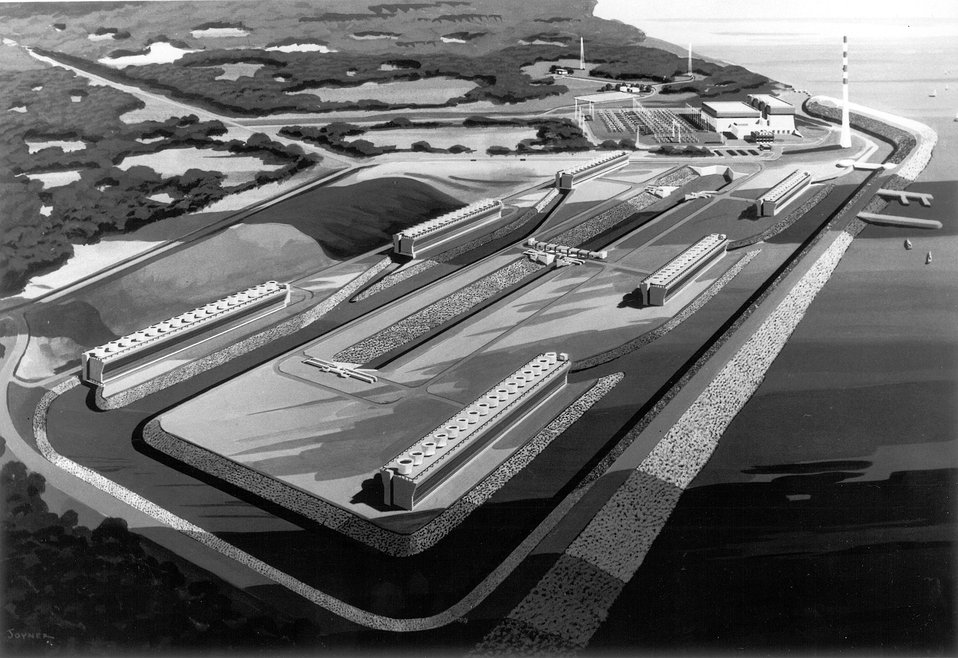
The $43 million cooling tower system shown in this rendering is under construction at the Tennessee Valley Authority's Browns Ferry Nuclear Power Plant to enable the plant to meet revised Alabama water temperature limits for the Tennessee River. Circa 1974.